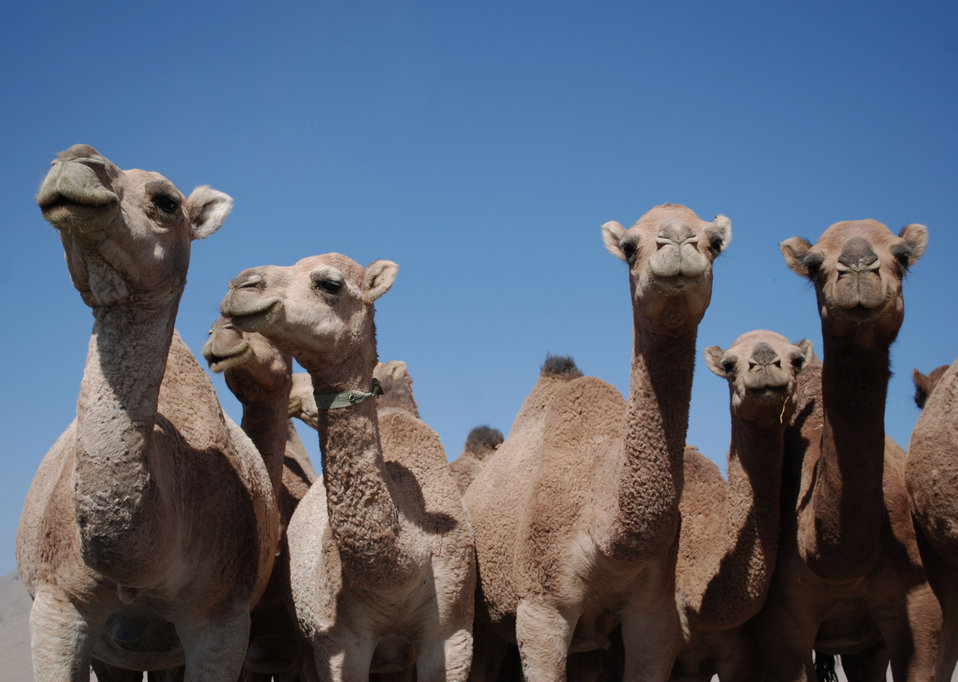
'On the Road' in Kandahar